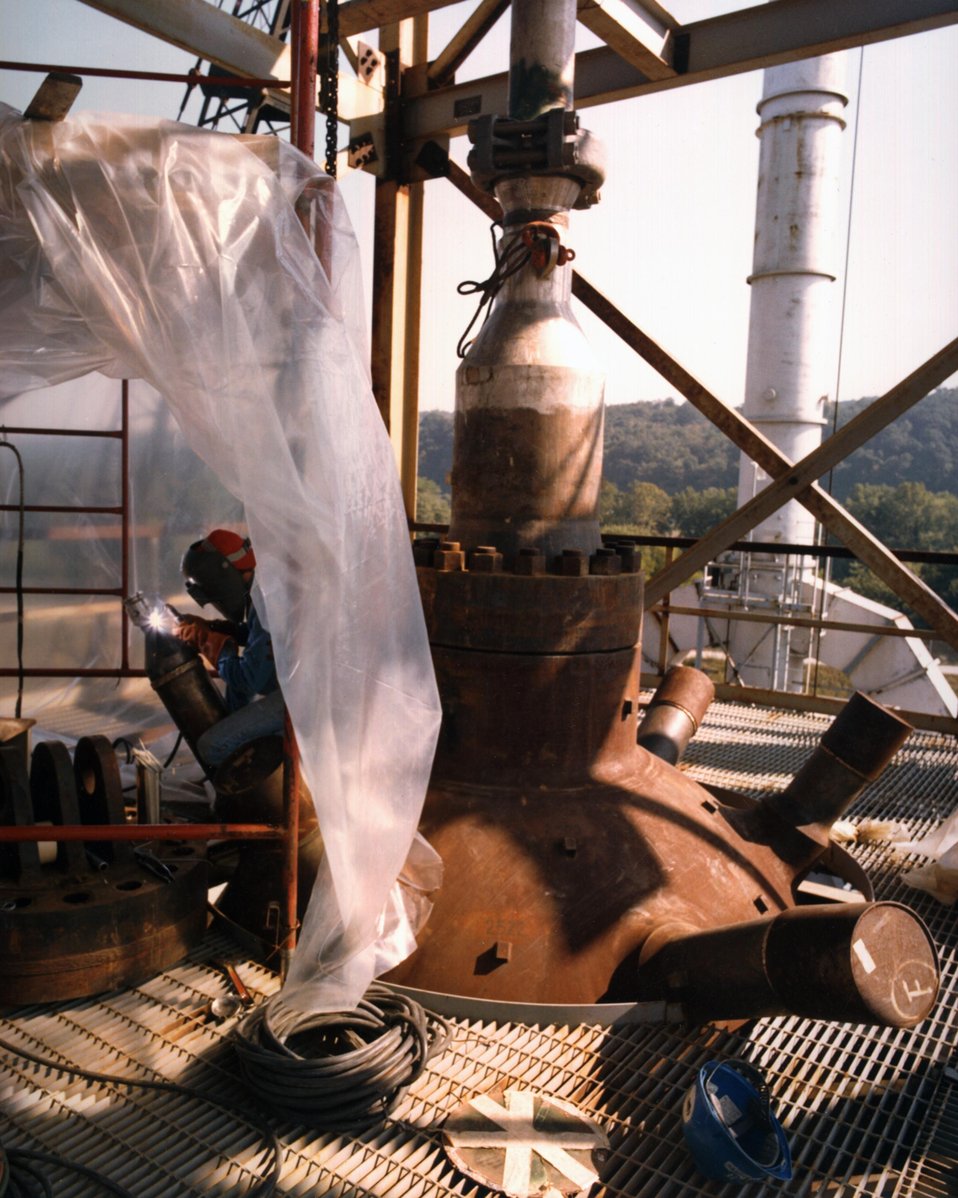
TOP OF THE H-COAL REACTOR AND THE CATALYST ADDITION SYSTEM.

CATALYST CAN BE SIMULTANEOUSLY ADDED AND WITHDRAWN FROM THE EBULLATED BED REACTOR SYSTEM WHICH ENABLES HOLDING CONVERSION CONSTANT AND GREATLY IMPROVES TEMPERATURE CONTROL OVER OTHER REACTOR CONCEPTS. THE REACTOR OPERATES AT 850 DEGREES FAHRENHEIT AND 2800 PSI. AND CAN OPERATE OVER A WIDE RANGE OF FLOWS TO PRODUCE EITHER BOILER FUEL OR SYNCRUDE STOCKS. THE NOZZLES ARE FOR INSTRUMENTATION INSTALLATION.